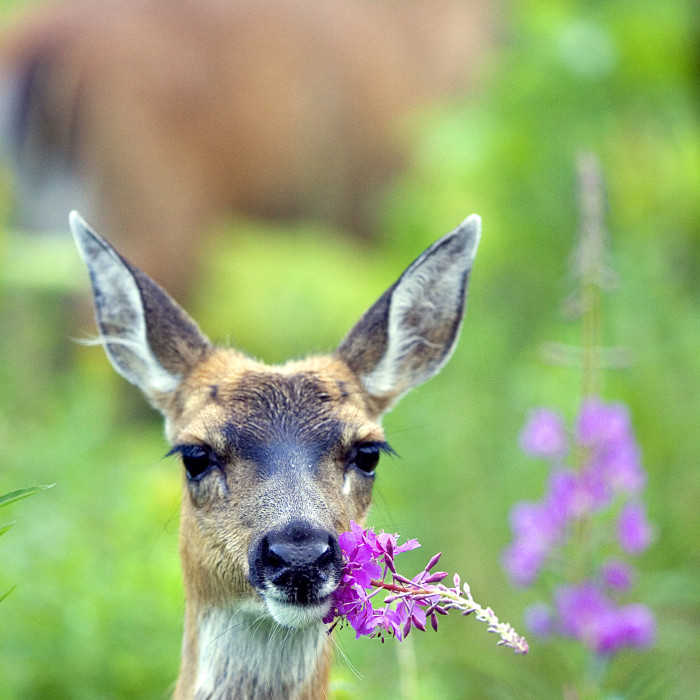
sitka black-tailed deer with fireweed

Kodiak National Wildlife Refuge, AK
July 2005